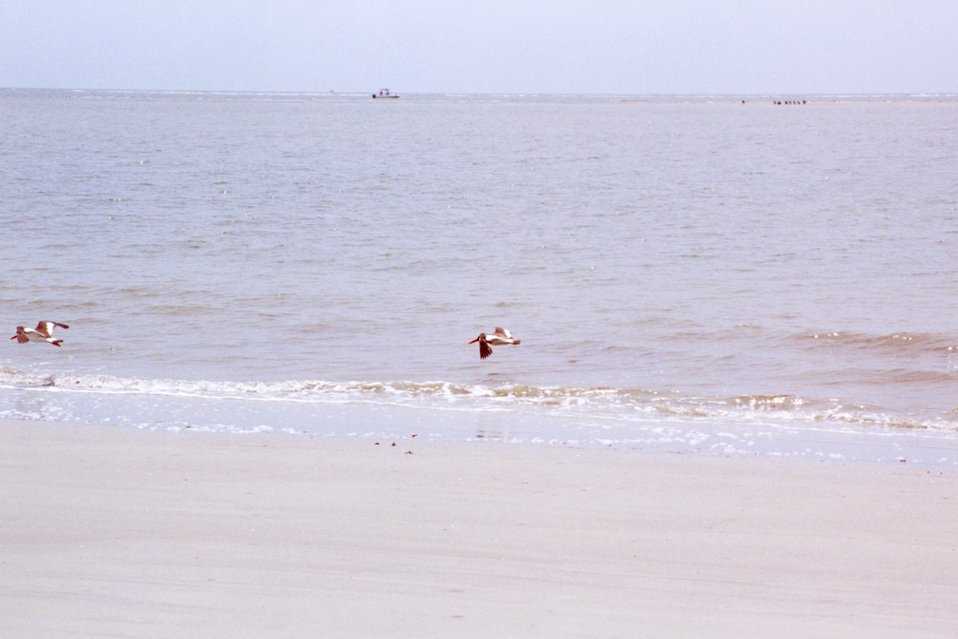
Brown pelicans skimming the water's edge.